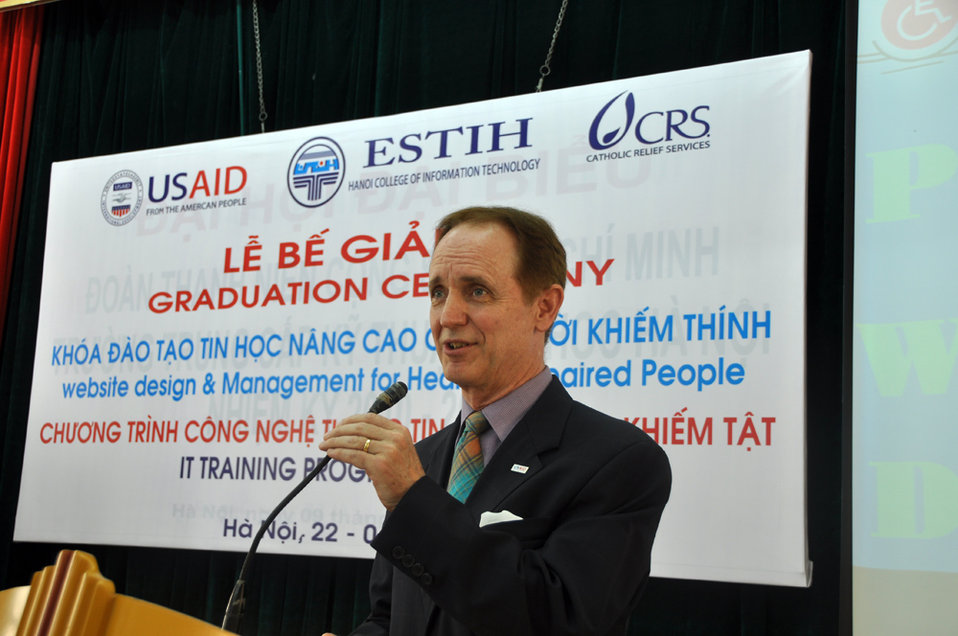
USAID Mission Director Francis Donovan participate in graduation of IT students in Hanoi on June 22, 2011.